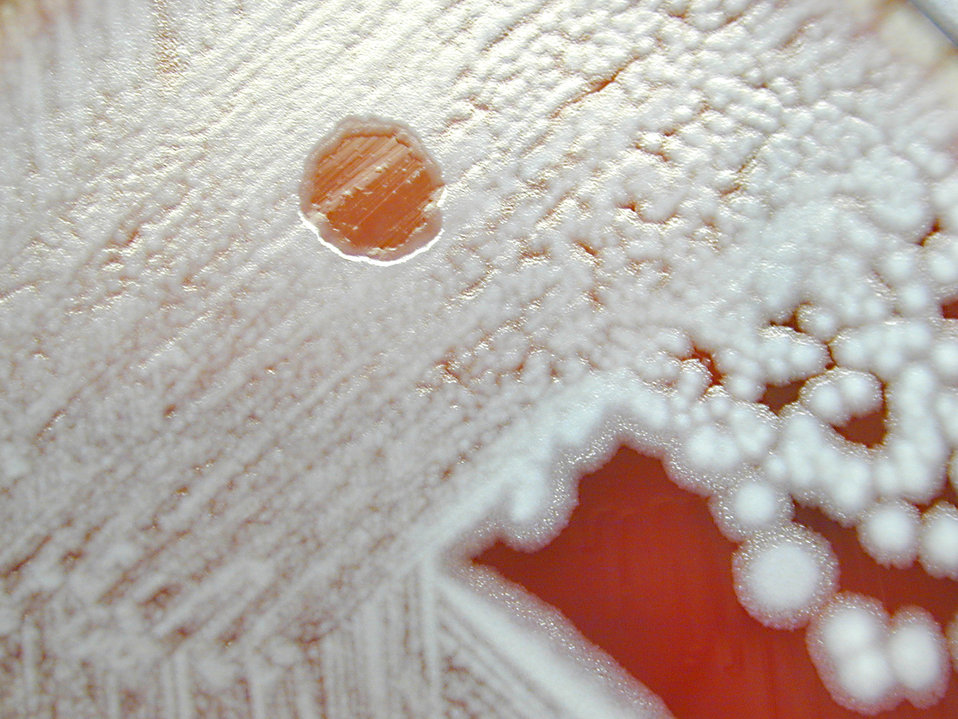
Bacillus anthracis gamma phage lysis on sheep blood agar.